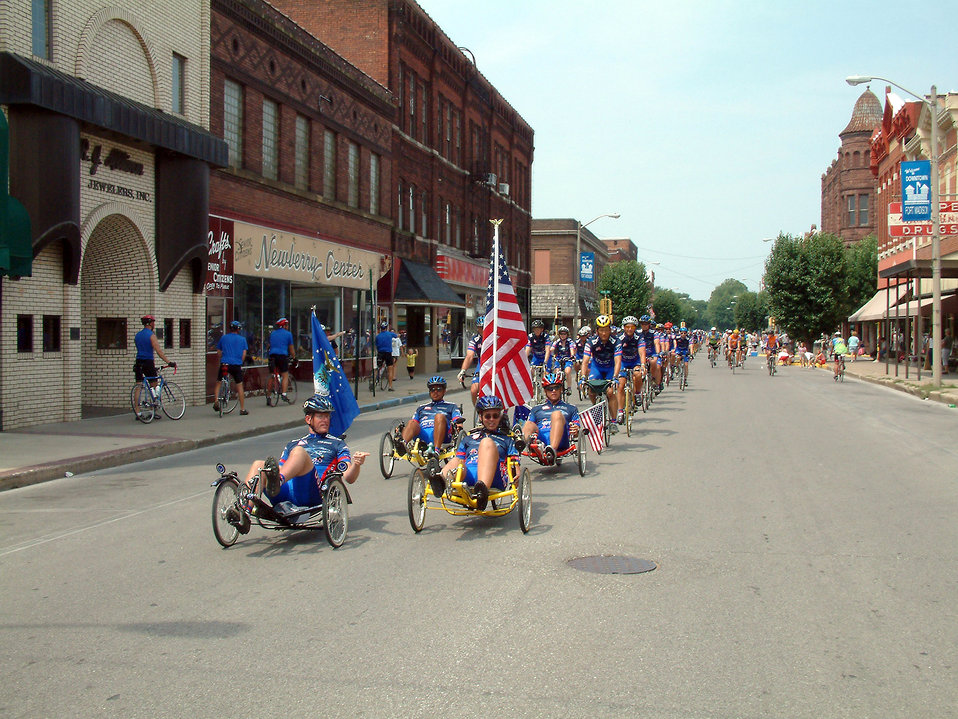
Biking across Iowa

FORT MADISON, Iowa -- Staff Sgt. Brad Whitmill and Dr. Carol Belt lead the Team Air Force cyclists here July 26. The destination marked the end of the seven-day, 450-mile Des Moines Register's Annual Great Bike Ride Across Iowa. The American flag on Belt's bike had been recently flown over Baghdad, Iraq, and Bagram Air Base, Afghanistan. It was carried to honor American forces serving in operations Enduring Freedom and Iraqi Freedom. Whitmill is stationed at Offut Air Force Base, Neb., and Belt is from Scott AFB, Ill.